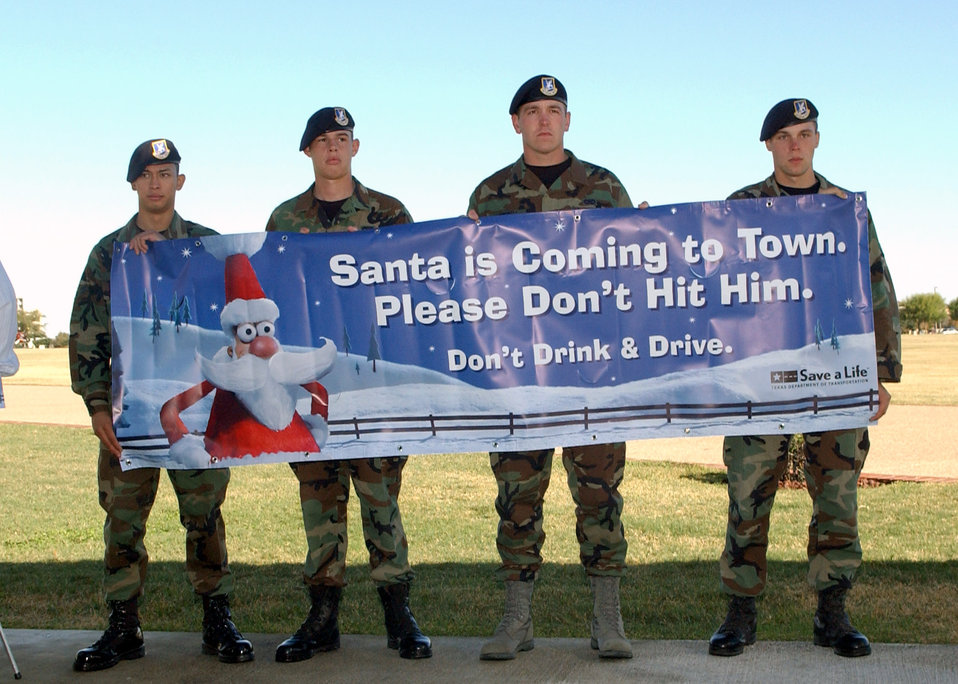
Lackland, Texas join forces for safety

Airman 1st Class Randolph Rivera, Airman Michael Gans, Airman 1st Class Kurt Cornwell and Airman 1st Class Austin Best hold a Texas Department of Transportation drunk driving awareness campaign poster Dec. 4 at Lackland Air Force Base, Texas. This is the 10th year of the Texas Department of Transportation's holiday public education campaign. The Airmen are from the 37th Security Forces Squadron.